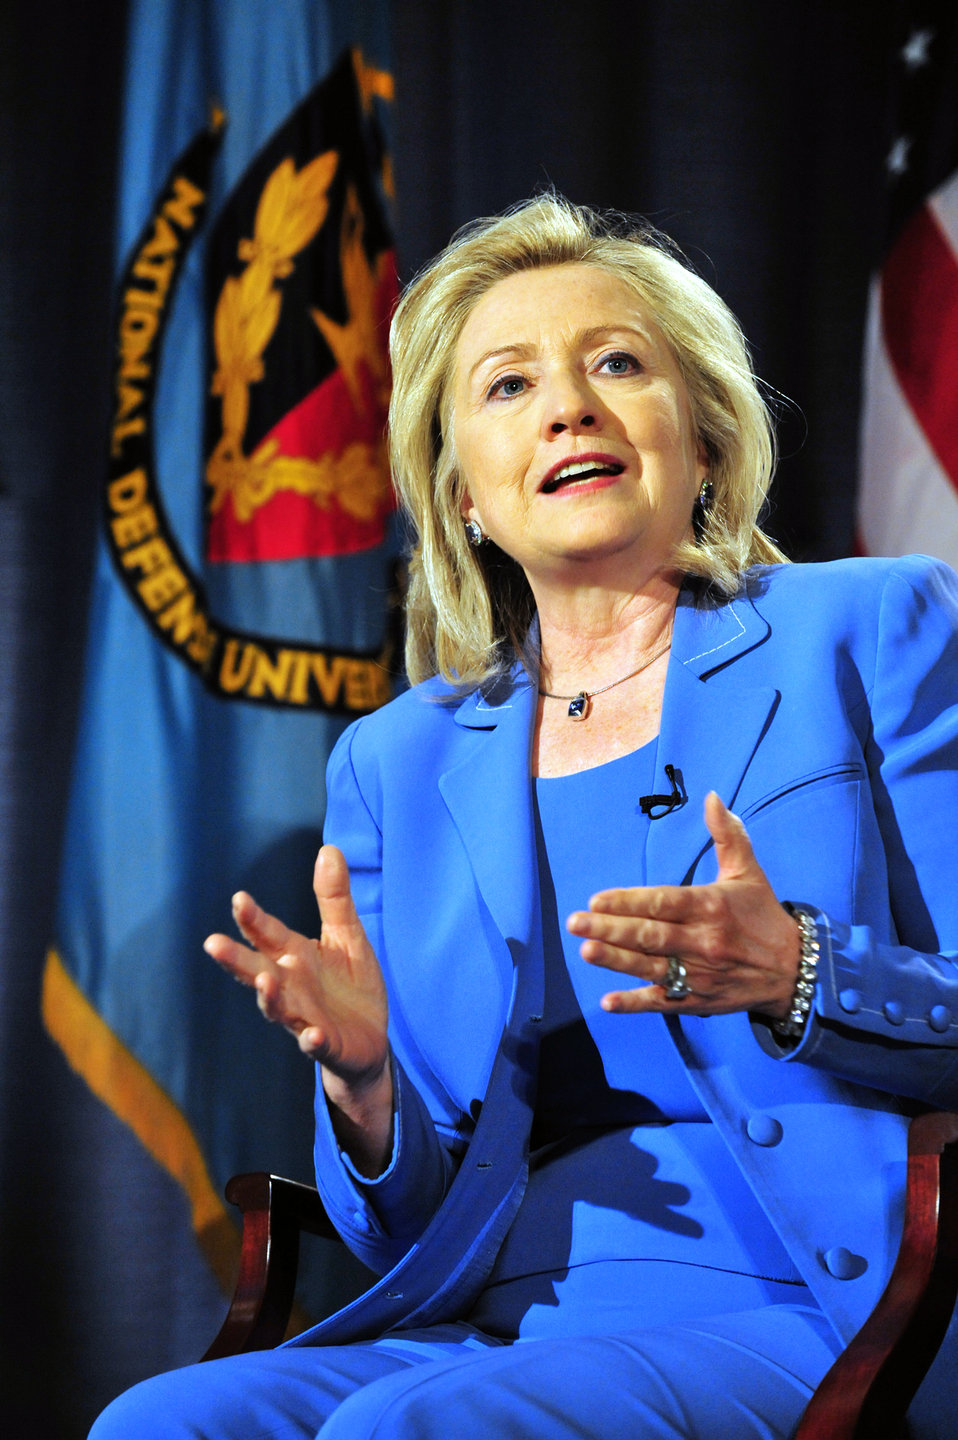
National Defense University Hosts a Conversation With Secretaries Clinton and Panetta

The National Defense University hosts a conversation with U.S. Secretary of State Hillary Rodham Clinton and U.S. Secretary of Defense Leon Panetta, moderated by Frank Sesno, Director of the School of Media and Public Affairs at George Washington University, at NDU in Washington, D.C., on August 16, 2011.